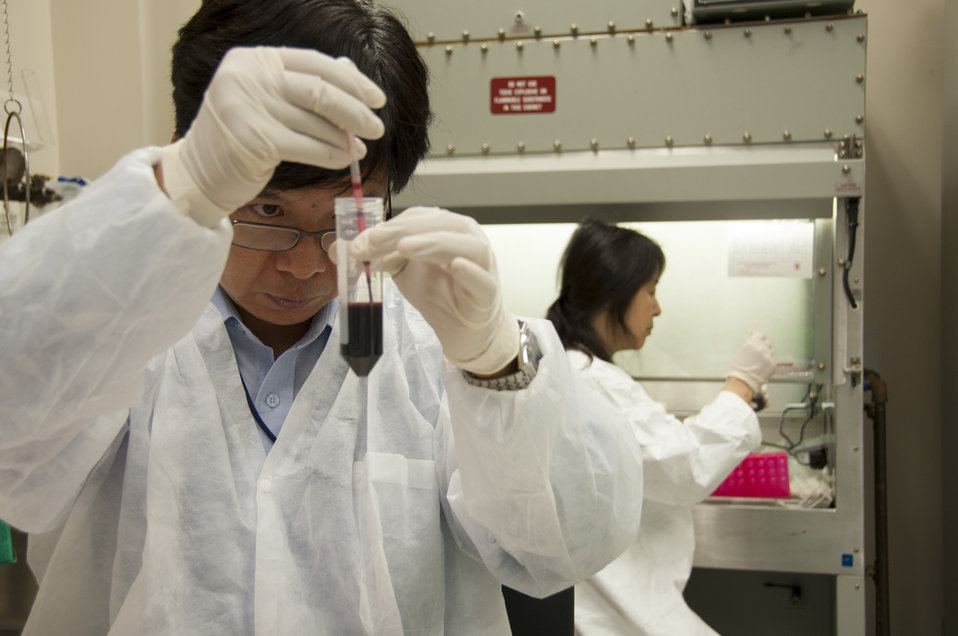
Blood Research: Saving Lives (8577)

Jason Liu, Ph.D., a laboratory chief at FDA’s Office of Blood Research and Review, collects white blood cells from processed whole blood. Meihong Liu, Ph.D., works in the background. FDA is responsible for the safety of our nation’s blood supply and is at the forefront of evaluating and encouraging innovative technologies for protecting it.

Read this Consumer Update to learn more: Advances in Saving Lives with Blood